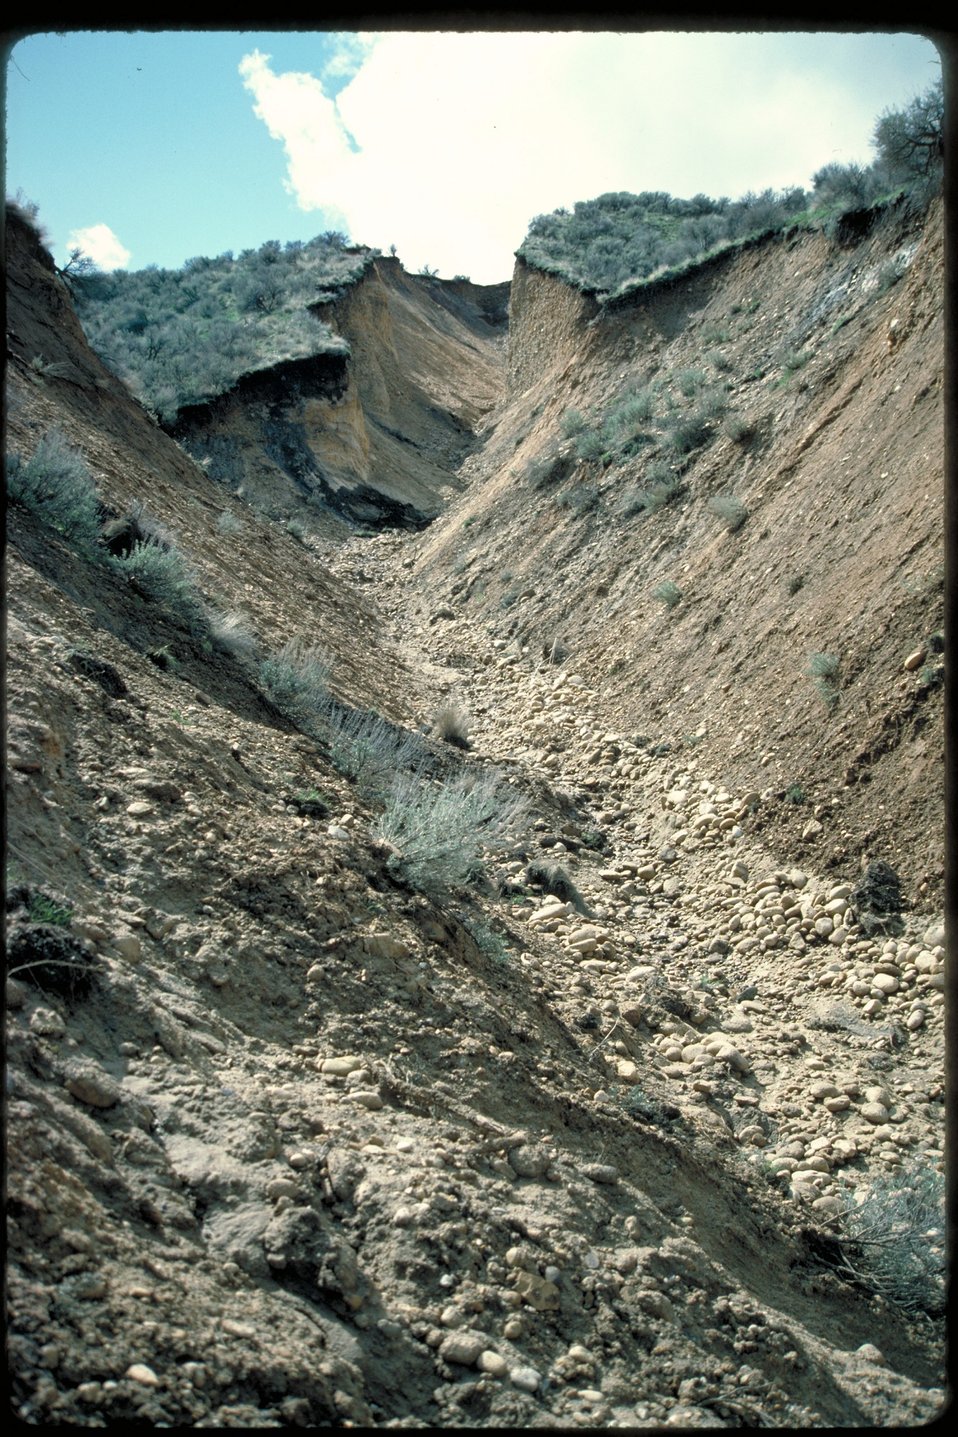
Little Gulch erosion Boise Front Four Rivers Field Office LSRD Lower Snake River District